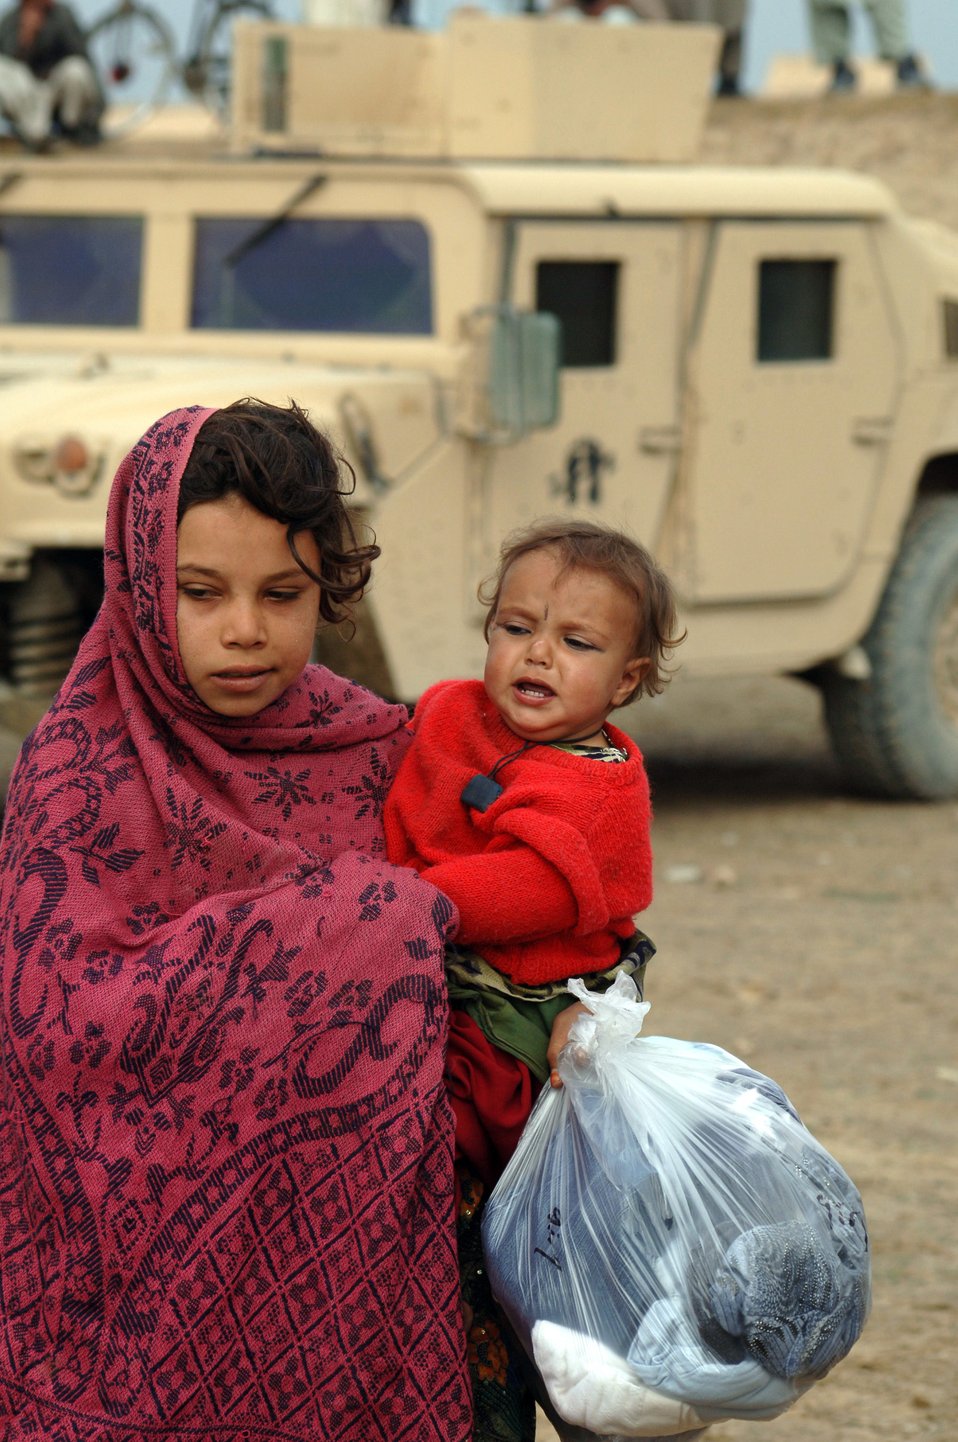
Airmen reach out

After a rare opportunity of going before men, a young girl carries a bag of clothes to her older sister, who by custom, was not allowed to be photographed. Airmen with the 455th Air Expeditionary Wing recently handed out more than 400 bags of clothes, shoes, school supplies, hygiene items and toys to the residents of the village of Gadia in Parwan Province, Afghanistan.